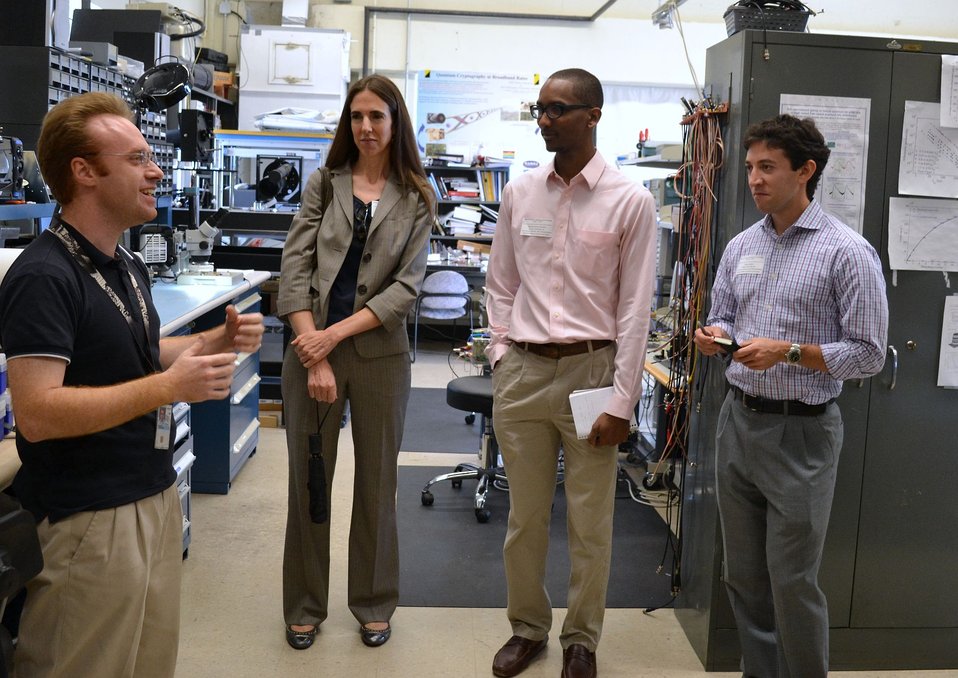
Committee on Commerce, Science, and Transportation Tour #4

Dr. Alessandro Restelli of the NIST Physical Measurement Laboratory (left) welcomes (left to right) Ms. Ann Zulkosky, Mr. Richard Duane Chambers and Mr. Andrew Ruffin of the Senate Committee on Commerce, Science, and Transportation to the Quantum Communications Laboratory where measurement research focuses on developing quantum information technologies that are useful and practical in today's telecommunications environment.